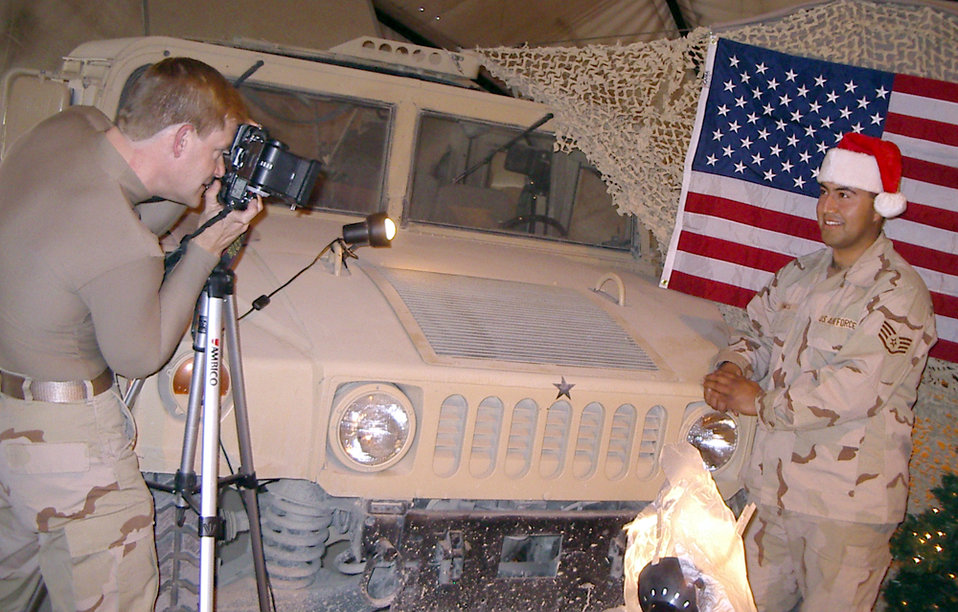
Say cheese!

BAGRAM AIR BASE, Afghanistan -- Tech. Sgt. Brian Davidson (left) snaps a digital Christmas portrait of a fellow airman here. Davidson spent nearly 16 hours capturing holiday photos of more than 250 airmen and soldiers. He is the public affairs chief for the 455th Expeditionary Operations Group.